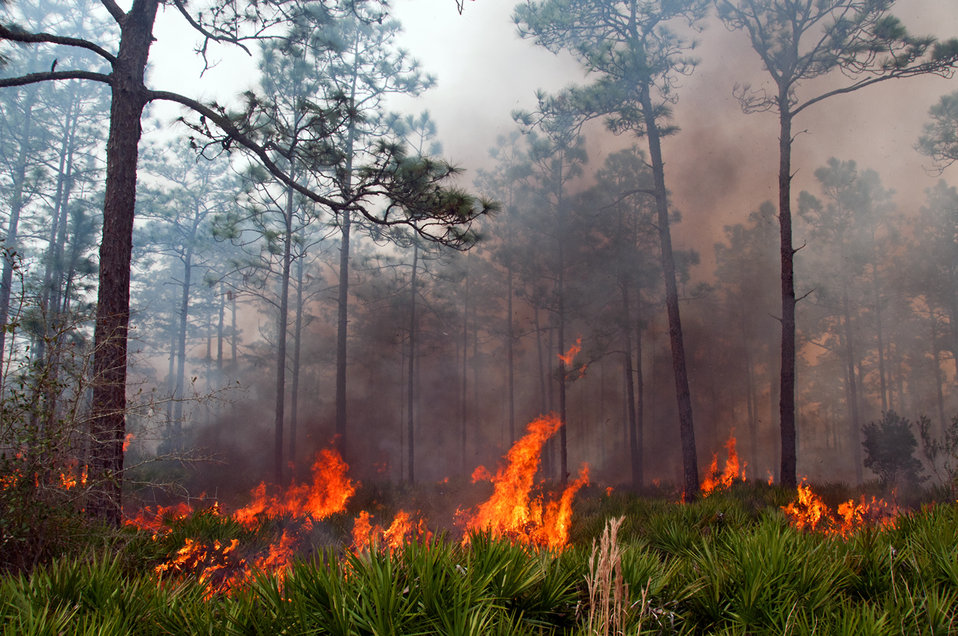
Lake Woodruff Volusia 5 Prescribed Fire Febuary 2014

Fire behavior in the palmetto understory, palmetto contain oils that cause the dark smoke. On February, 12 2014 USFWS firefighters conducted a 137 acre prescribed fire at Lake Woodruff NWR to reduce the wildfire risk and enhance the wildlife habitat on the southern end of the refuge.